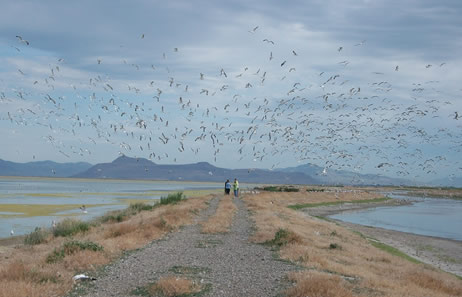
Gull colony at Bear River Migratory Bird Refuge

California gull colony flies above students and Youth Conservation Corps participants at Bear River Migratory Bird Refuge.